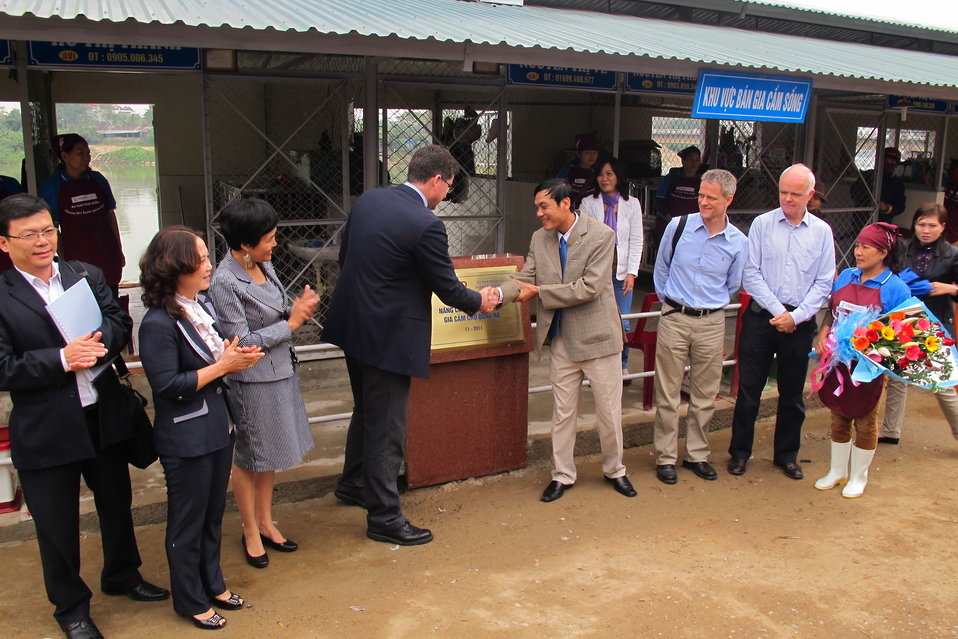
Promoting Hygiene and Sanitation at Dong Ha Poultry Market